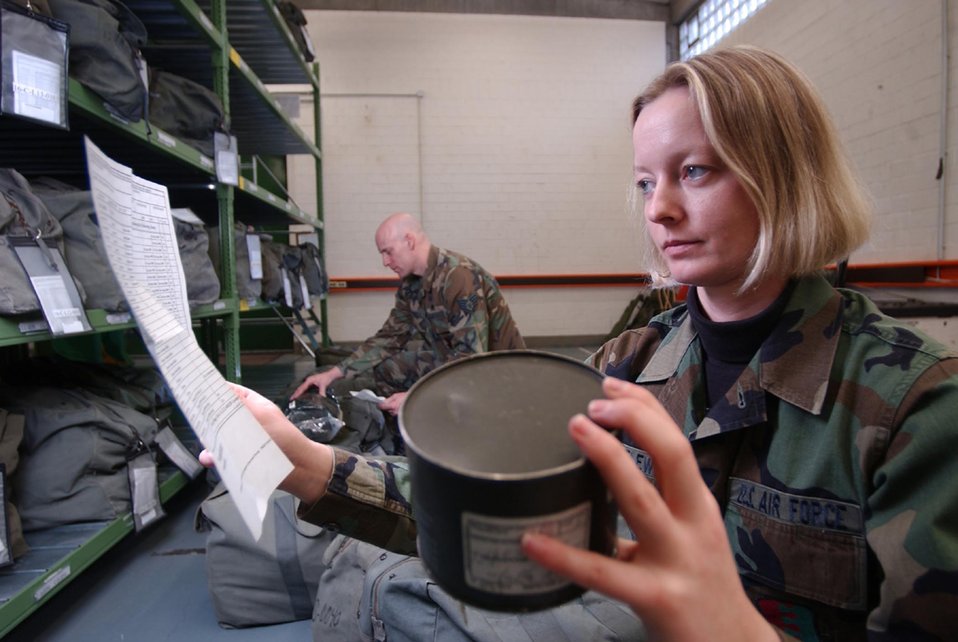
Dzincielewski

RHEIN-MAIN AIR BASE, Germany -- Senior Airman Anke Dzincielewski inspects the dates on gas mask canisters to ensure they are current. Dzincielewski grew up in East Germany and remembers life before the Berlin Wall came down. She is deployed here from Ellsworth Air Force Base, S.D.